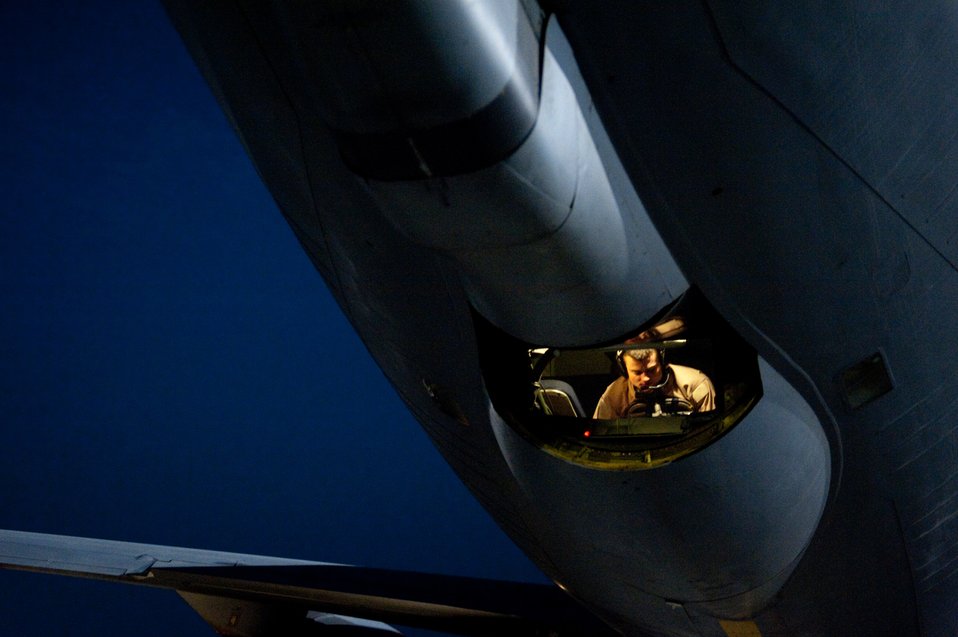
Working through the night

Senior Airman Andrew Deck, 340th Expeditionary Air Refueling Squadron boom operator, conducts a KC-135 Stratotanker preflight check, Dec. 2, 2009, at an airfield in Southwest Asia. The squadron refuels joint and coalition aircraft in support of operations Iraqi Freedom and Enduring Freedom.